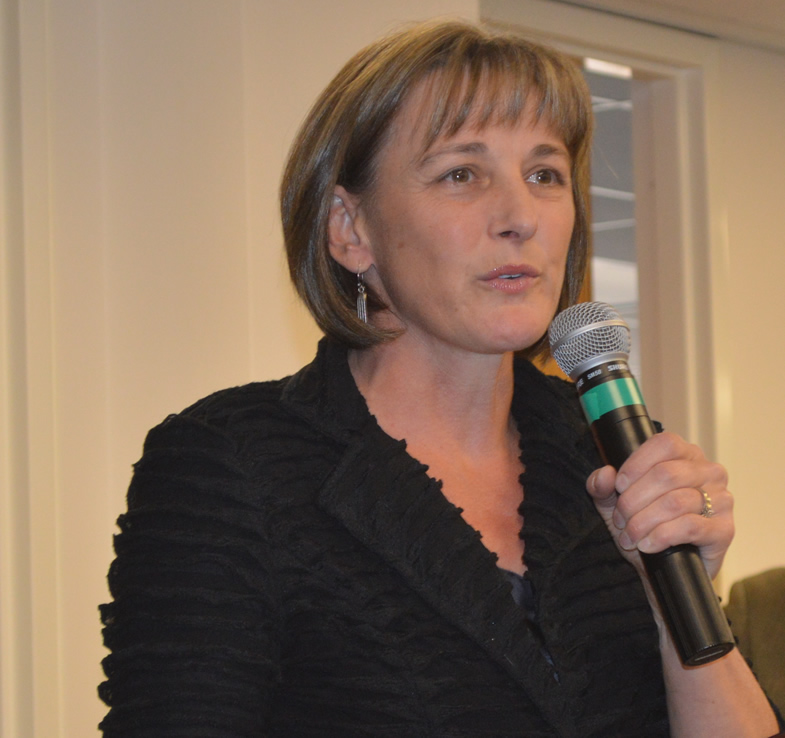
Regional Director Steve Guertin Moves on to Senior Leadership Position

On November 1, 2012, USFWS Mountain-Prairie Regional Director, Steve Guertin, served his last day as Regional Director before moving on to a senior leadership position at Headquarters.

Regional leadership and partners shared their memories of Steve's outstanding leadership and his unique ability to leverage his outstanding technical skills while maintaining a very personable persona - all amidst a variety of challenging issues.